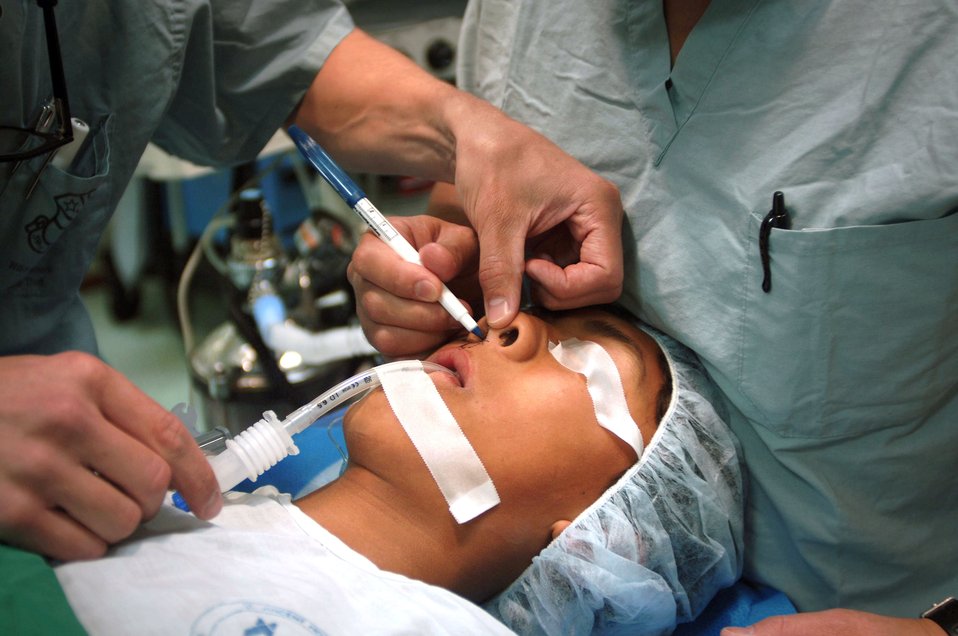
Air Force medics conduct plastic surgery clinic

CUENCA, Ecuador -- U.S. Air Force plastic surgeons prepare 14-year-old Adrian Pauta for cleft lip surgery at the military hospital here. A seven-person plastic surgery team from Wilford Hall Medical Center at Lackland Air Force Base, Texas, is providing free corrective surgeries to Ecuadorian civilians as part of a 12-day medical readiness training exercise.